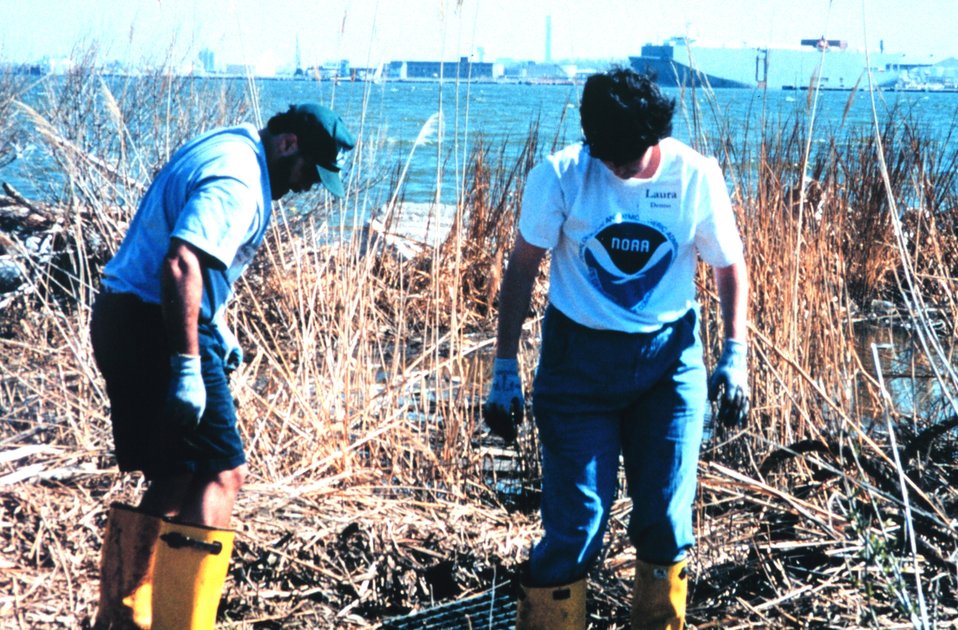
Volunteers helping clean up the wetlands and waterfront area around Fort McHenry in Baltimore Harbor.